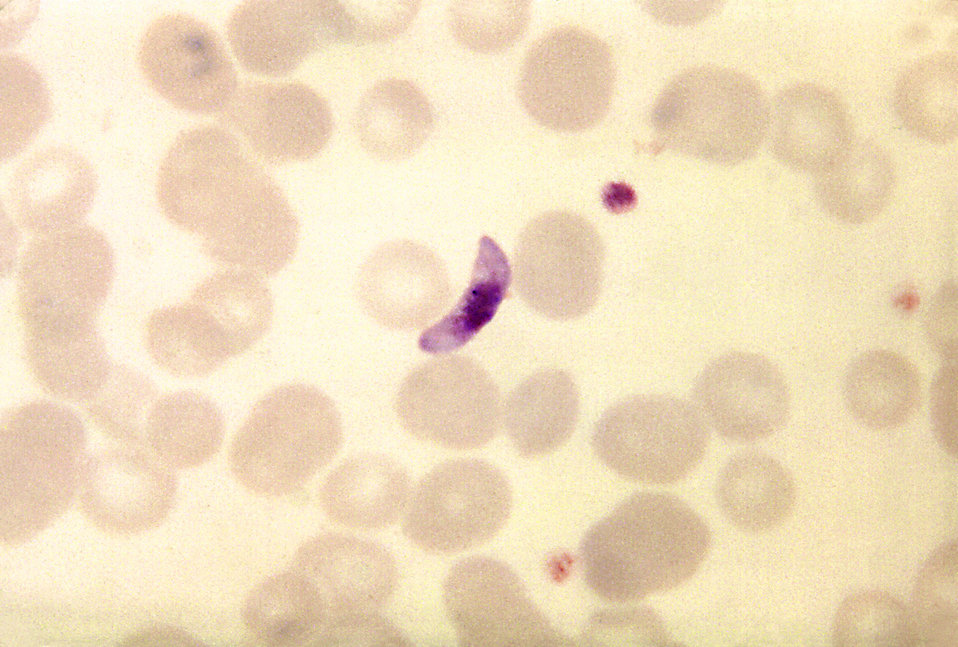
This thin film blood smear micrograph depicts a Plasmodium falciparum macrogametocyte parasite.